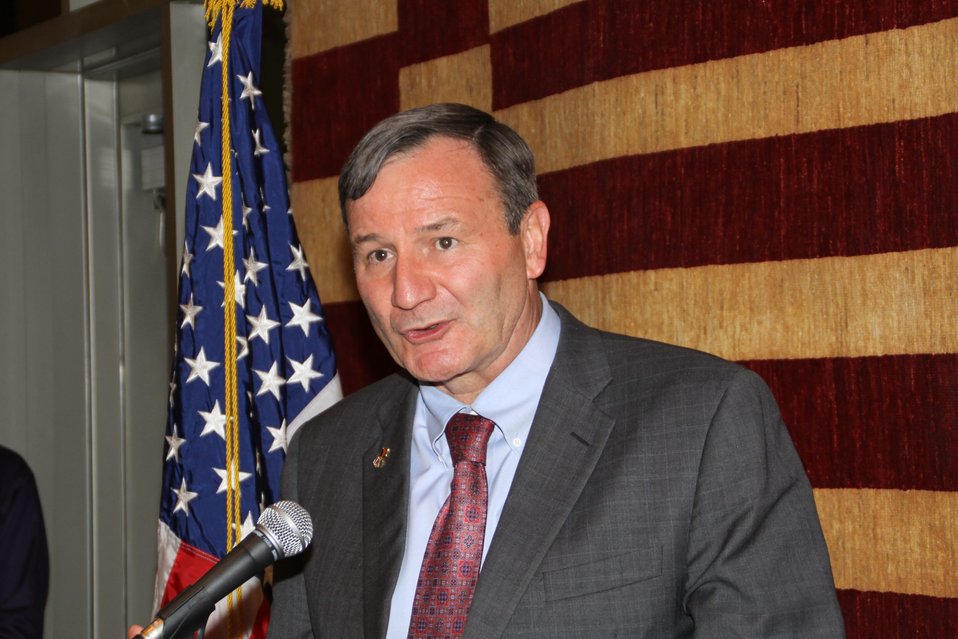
US Embassy Town Hall July 21, 2010